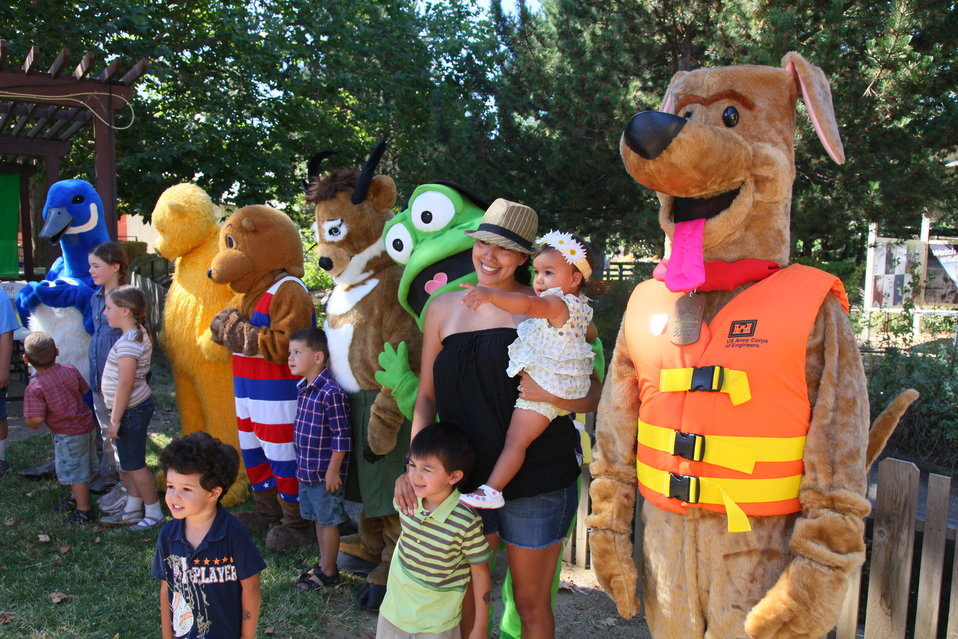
Explore America’s Great Outdoors at the 2012 California State Fair

Federal and state agencies are hosting the America’s Great Outdoors exhibit at the California State Fair in Sacramento, Calif., starting July 12, 2012. Bobber the Water Safety Dog (right), with the U. S. Army Corps of Engineers, is part of the interactive exhibit and hands-on activities emphasizing conservation, recreation, and water safety on public lands and waterways.